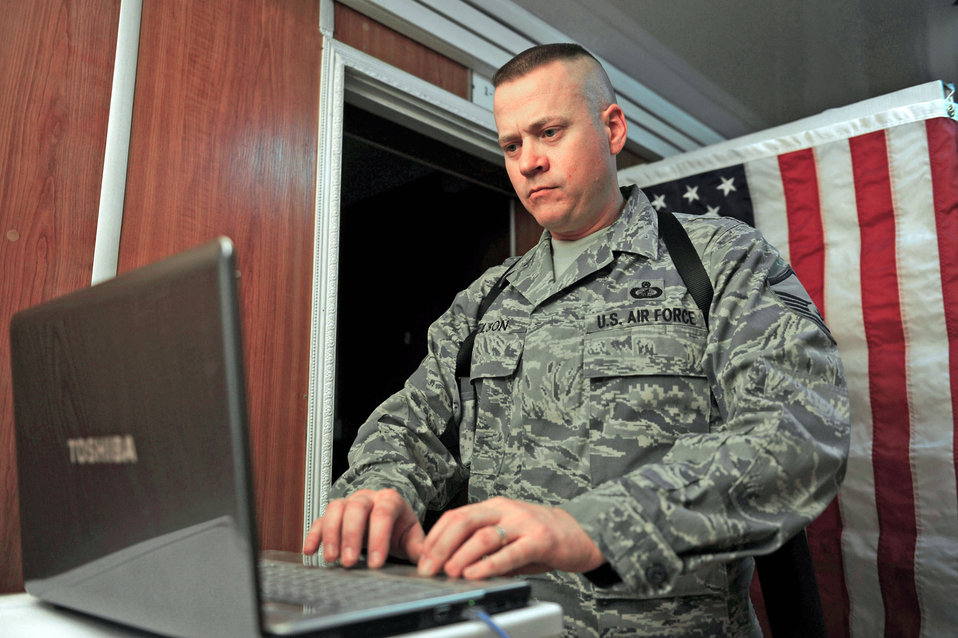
Satellite salute

Master Sgt. Roger Nelson communicates with his brother, 2nd Lt. Bryon Kroger, Oct. 27, 2009, via satellite from Camp Eggers, Afghanistan, during the Officer Training School graduation at Maxwell Air Force Base, Ala. Through the satellite hookup, Sergeant Nelson rendered the first salute Lieutenant Kroger received following his commissioning. Sergeant Nelson is a budget analyst deployed from Shaw Air Force Base, S.C. and calls Granite Falls, Minn., home. Lieutenant Kroger goes on to Goodfellow AFB, Texas, for intelligence school training and hails from Cherokee, Iowa.